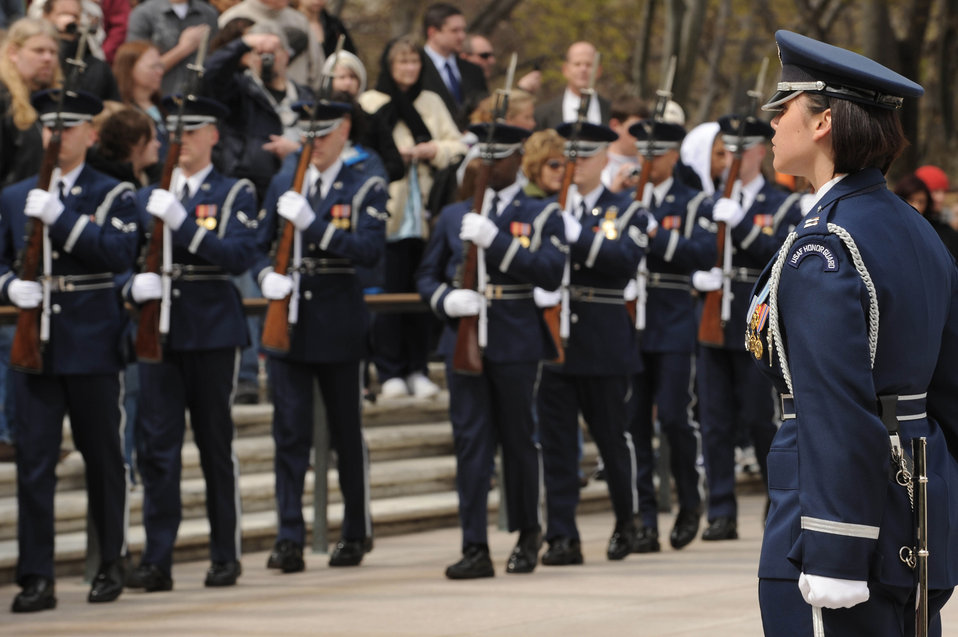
Wreath laying ceremony

Capt. Tiffany Stone commands her U.S. Air Force Honor Guard flight into formation during a wreath-laying ceremony at the Tomb of the Unknowns, April 5, 2011, at Arlington National Cemetery, Va. The guest honoree and wreath presenter was Gen. Col. Alexander Nikolyevich Zelin, commander-in-chief of the Russian air force. The wreath was laid in honor of all fallen service members.